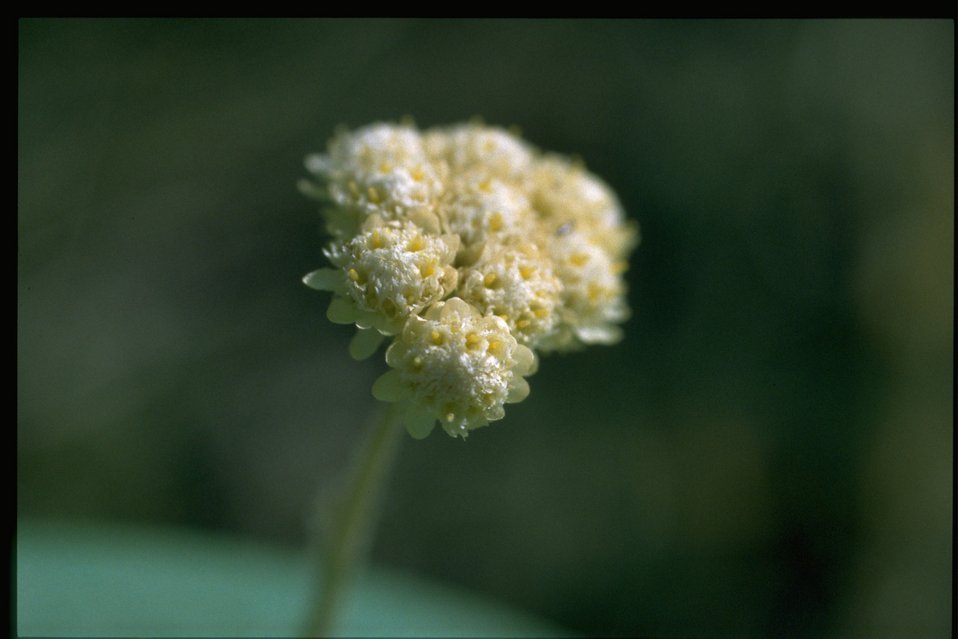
Closeup shot of littleleaf pussytoes (Antennaria microphylla).